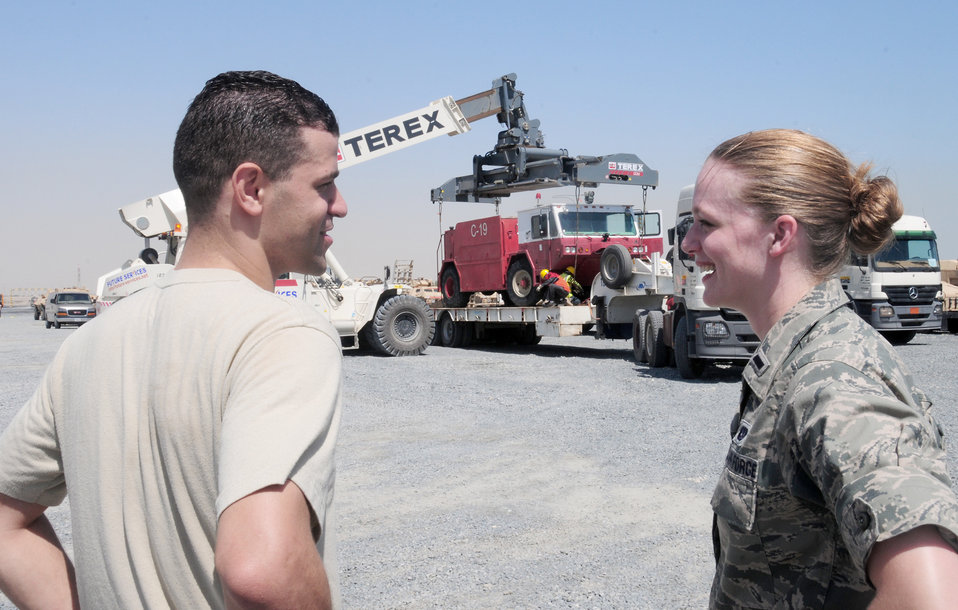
Air Force LNOs move assets by sea

Staff Sgt. Joseph Jacovina and 1st Lt. Elise Jones discuss the movement of an Air Force fire truck May 4, 2010, at an undisclosed location in Southwest Asia, while contractors load the asset onto a truck to be taken to the nearby seaport. Sergeant Jacovina and Lieutenant Jones are U.S. Air Forces Central Command liaison officers. They coordinate sea-based shipments of oversized military equipment in and out of the USAFCENT area of responsibility.